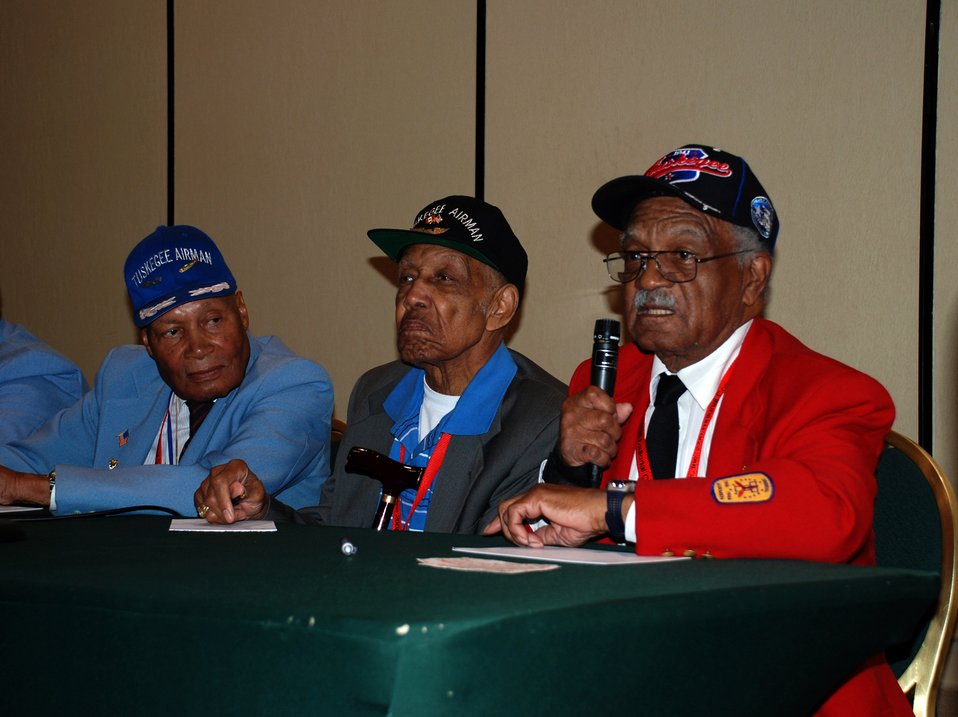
Original Tuskegee Airmen share experiences

William Fauntroy (right) speaks during an open forum at the Tuskegee Airmen Convention July 19 in Philadelphia. Mr. Fauntroy is an original Tuskegee Airman pilot. Seven Tuskegee Airmen pilots spoke about their personal experiences as some of the first African-American pilots and answered questions posed by the audience. Topics included integration into the Army, their motivations to fly and the challenges they faced being African-Americans during a time of racial segregation.